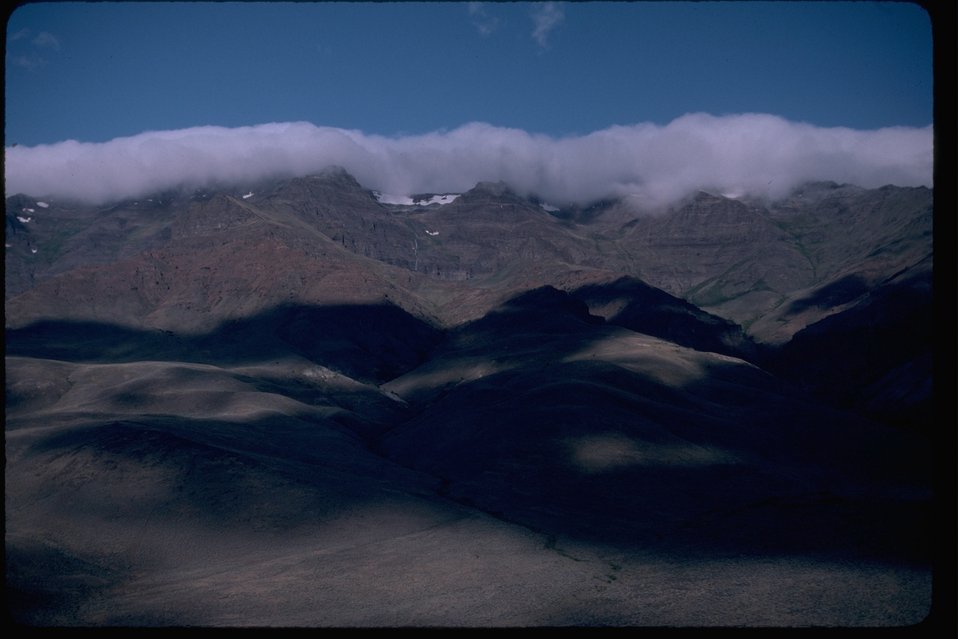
Aerial shot of the East Face of the Steens Mountain. OR 2-85F